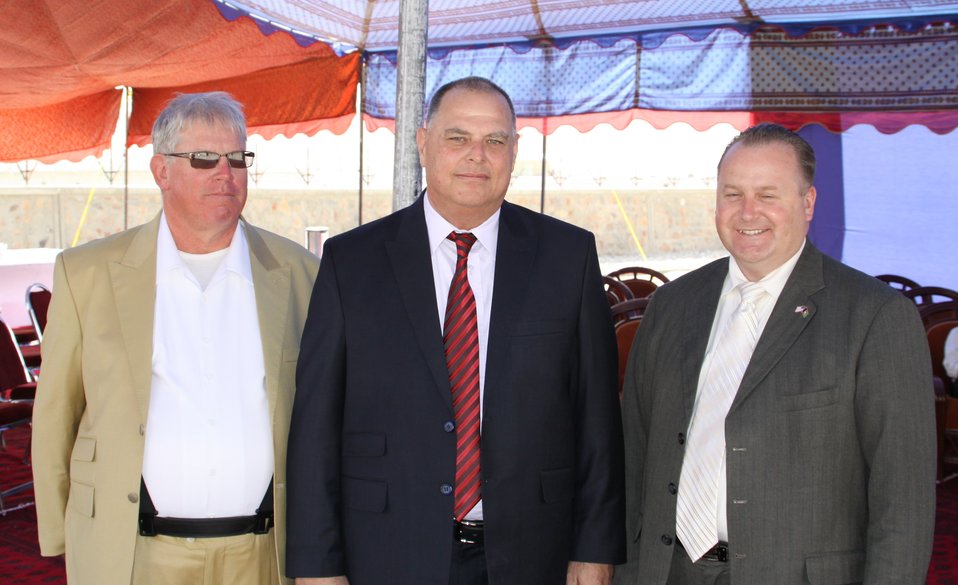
105 MW Tarakhil Power Plant Handover